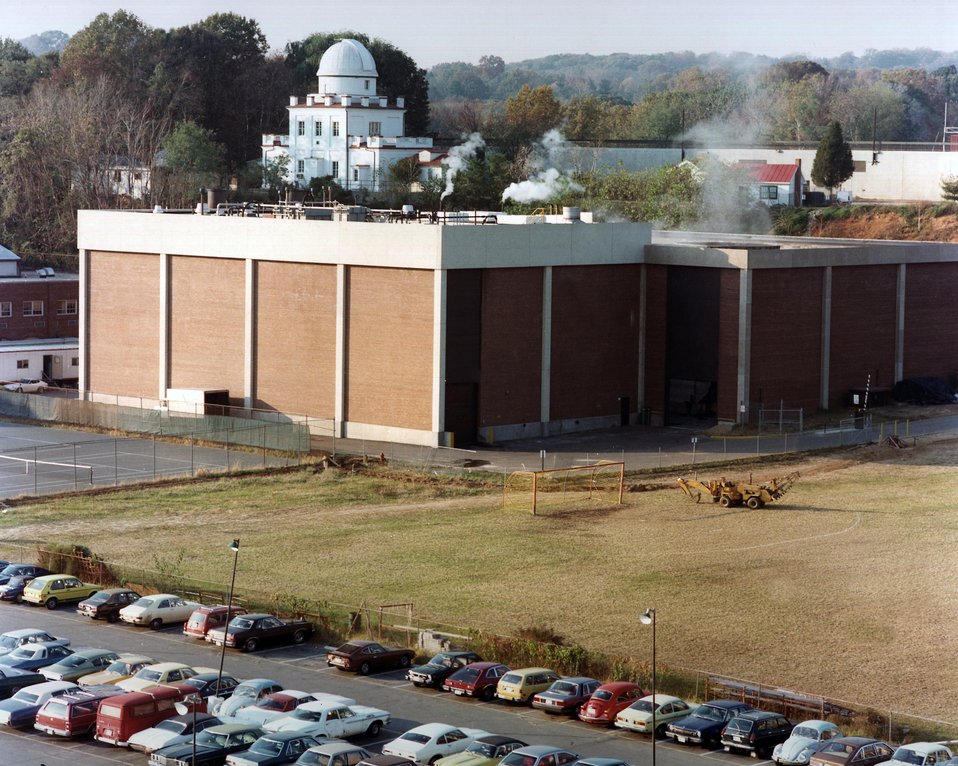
EXTERIOR VIEW OF GEORGETOWN UNIVERSITY'S ATMOSPHERIC FLUIDIZED BED COMBUSTION SYSTEM.

THE PLANT IS CAPABLE OF BURNING HIGH SULFUR COAL WHILE MAINTAINING STACK EMISSIONS WITHIN EPA AND WASHINGTON, D C ESTABLISHED POLLUTION LIMITS. IN ADDITION, THE NEW SYSTEM GENERATES RELATIVELY LOW QUANTITIES OF NITROGEN OXIDES WHICH ARE NOW CONSIDERED TO BE SIGNIFICANT POLLUTANTS RESULTING FROM COMBUSTION.